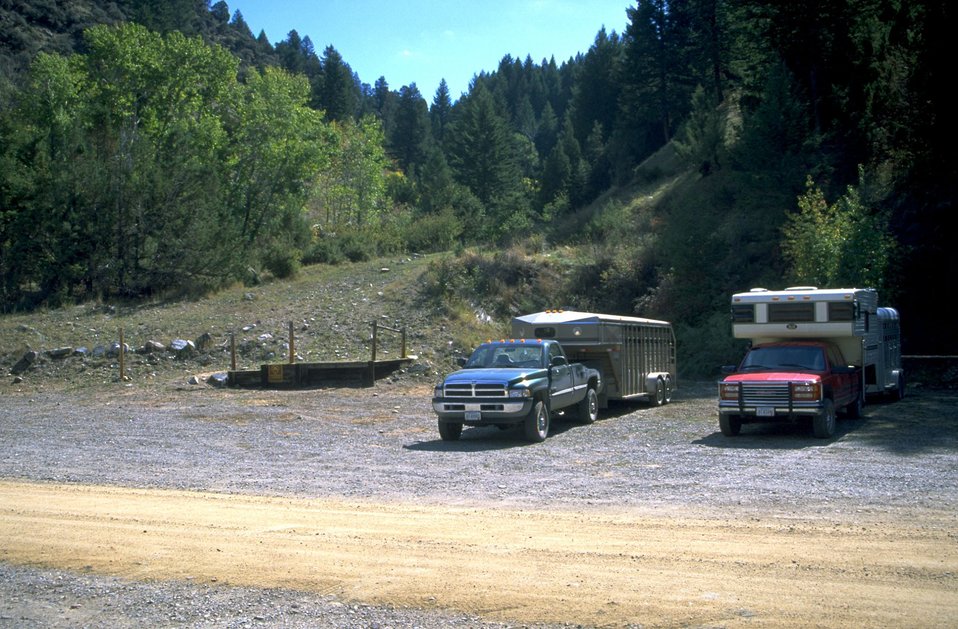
Trailhead and parking lot at Trail Creek